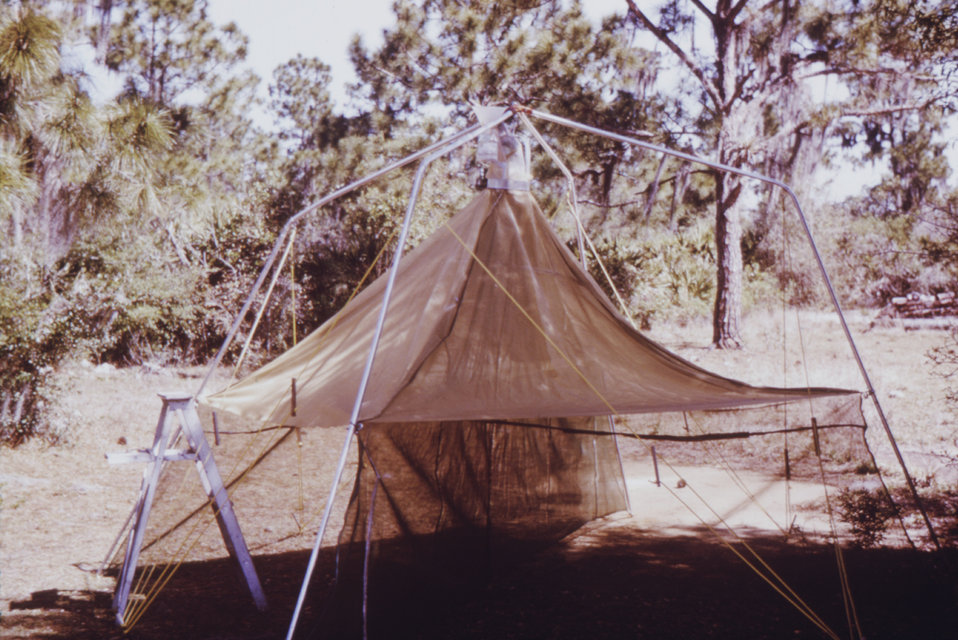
Pictured here is a malaise fly and mosquito trap used more in the collection of biting flies than for mosquitoes.